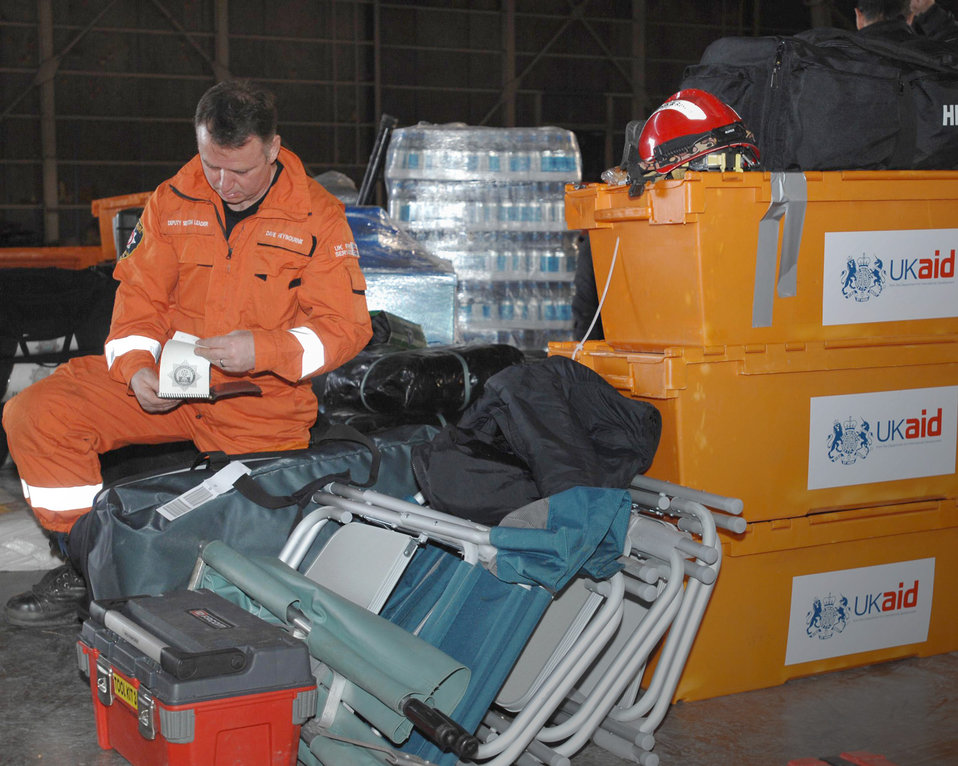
Mobility Airmen

Dave Heybourne, a member of the United Kingdom International Search and Rescue team, preps his gear March 14, 2011, to support relief operations at Misawa Air Base, Japan, following an 8.9-magnitude earthquake that triggered a tsunami off Japan's eastern coast.